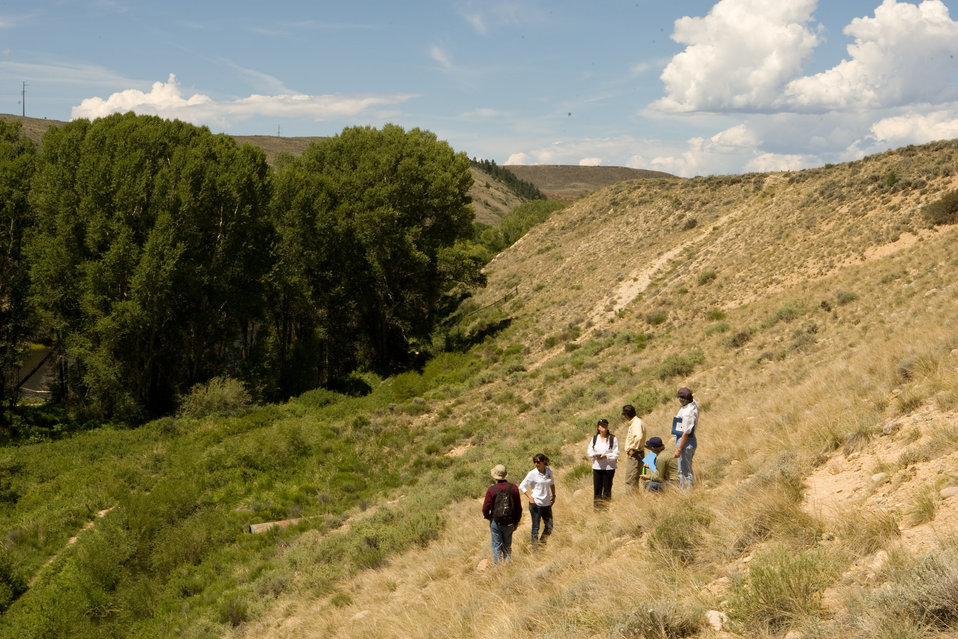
Colorado Rare Plant Conservation Initiative

The Colorado Rare Plant Conservation Initiative (RPCI) is a partnership of 23 statewide and regional agencies, private organizations, and academic institutions working to conserve 121 rare plants in Colorado. As part of these efforts the group developed the Colorado Rare Plant Conservation Strategy, developed Best Management Practices to reduce energy development impacts, addressed climate change, and developed focused strategies for the conservation of individual species at eight priority landscapes. The group has also worked to coordinate volunteer efforts for plant conservation across the state.